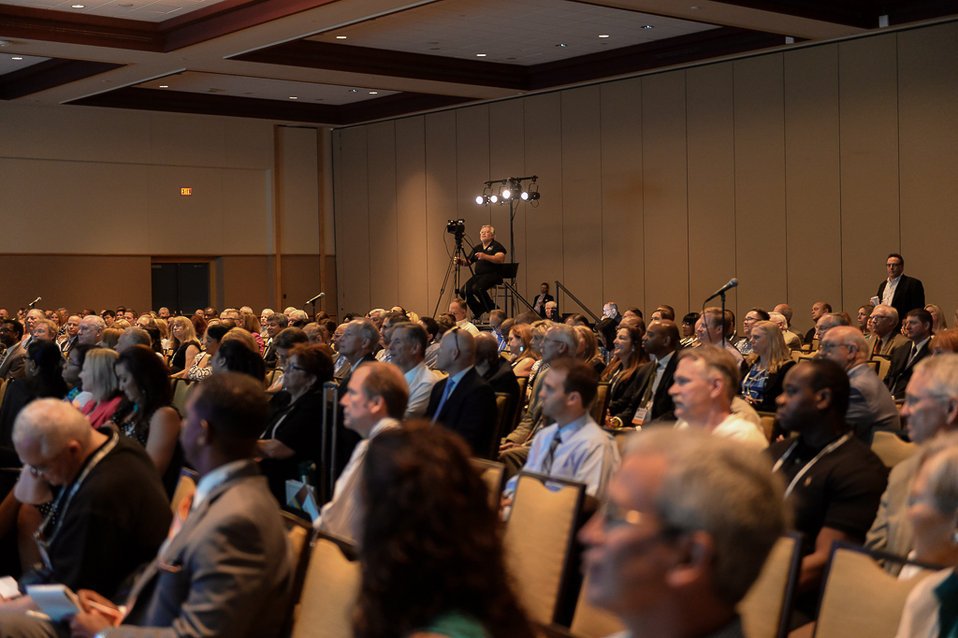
OSDBU Conf 11